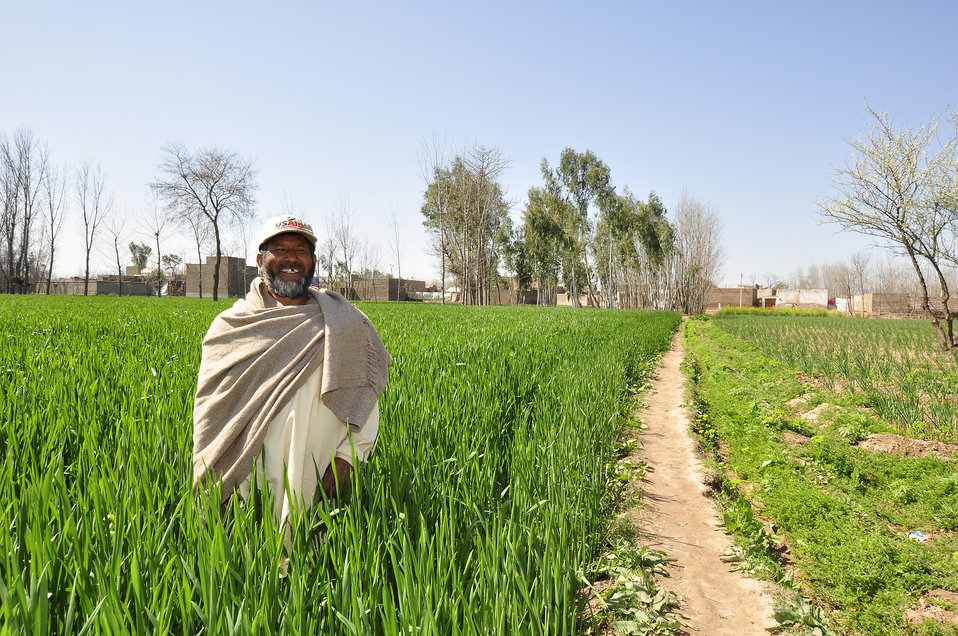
2011 March: USAID's Agricultural Recovery Program in 22 districts of Khyber Pakhtunkhwa, Punjab and Balochistan is an excellent example of the impact US development assistance can have. We have helped more than 500,000 farmers salvage the winter planting season and livestock after the floods. As a result, wheat farmers have nearly doubled their harvests. More than 5 million people have benefited. These photos show progress of the USAID Agricultural Recovery Project in Khyber Pakhtunkhwa.